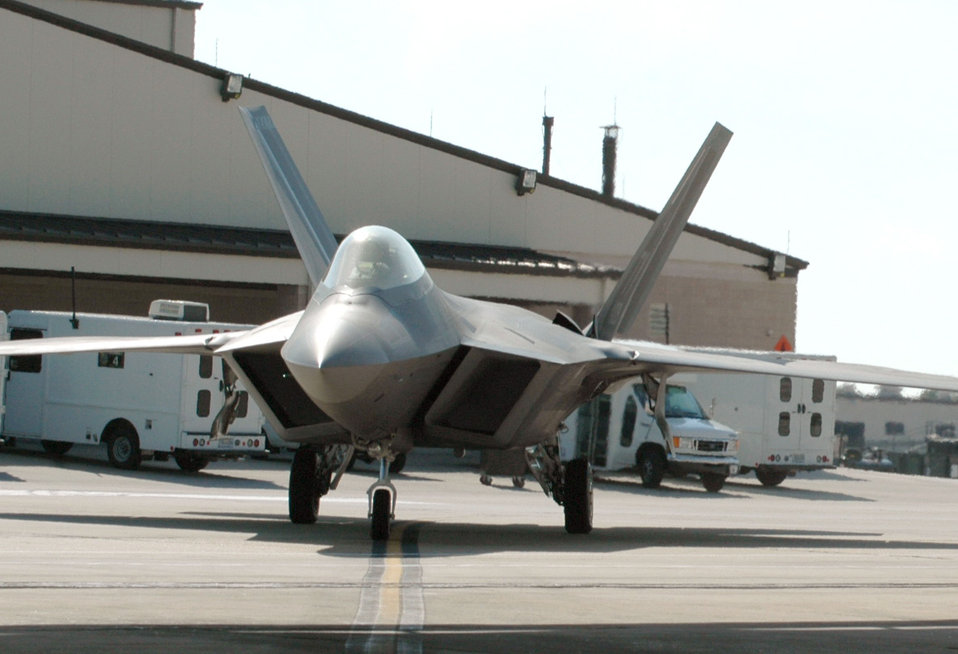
Tyndall spearheads F-22 fighter tactics integration

An F-22 Raptor taxis to the hangar after a mission at Tyndall Air Force Base, Fla. Command and control integration advancements with the Raptor include free text messages which can be sent by controllers to the pilots using high-speed digital data link technology.